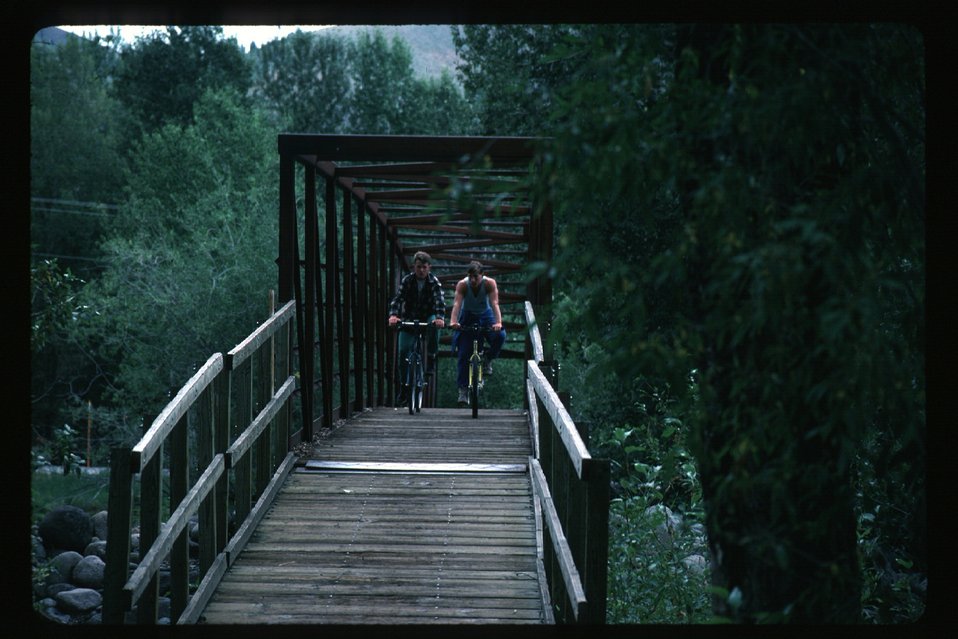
Recreation Scenic Biker Shoshone Field Office USRD Upper Snake River District